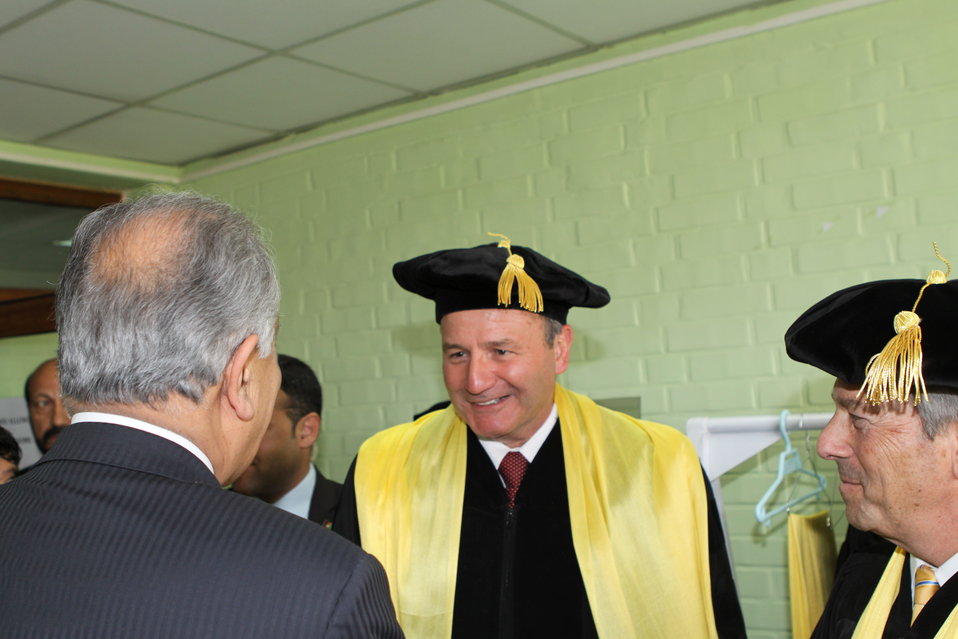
100526 AUAF Graduation 074